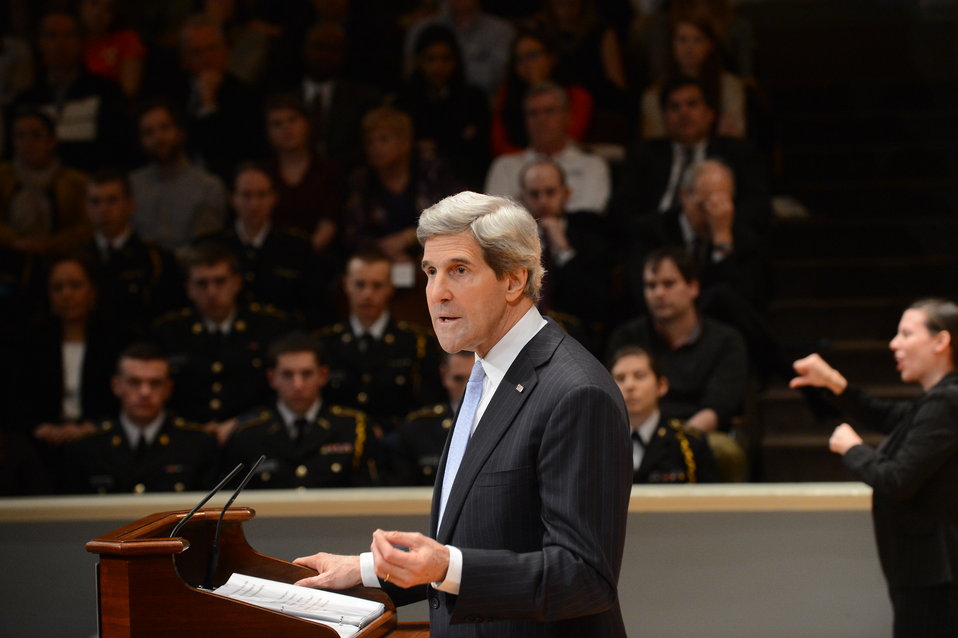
Secretary Kerry Delivers Remarks at UVA

U.S. Secretary of State John Kerry delivers remarks at the University of Virginia in Charlottesville, Virginia, February 20, 2013.